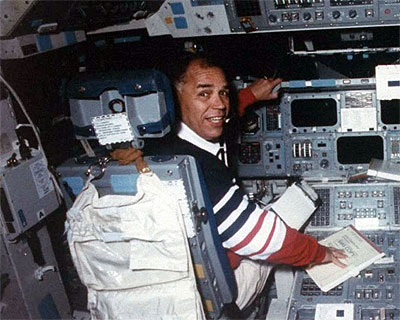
Col. Frederick Gregory: First African-American to command space shuttle